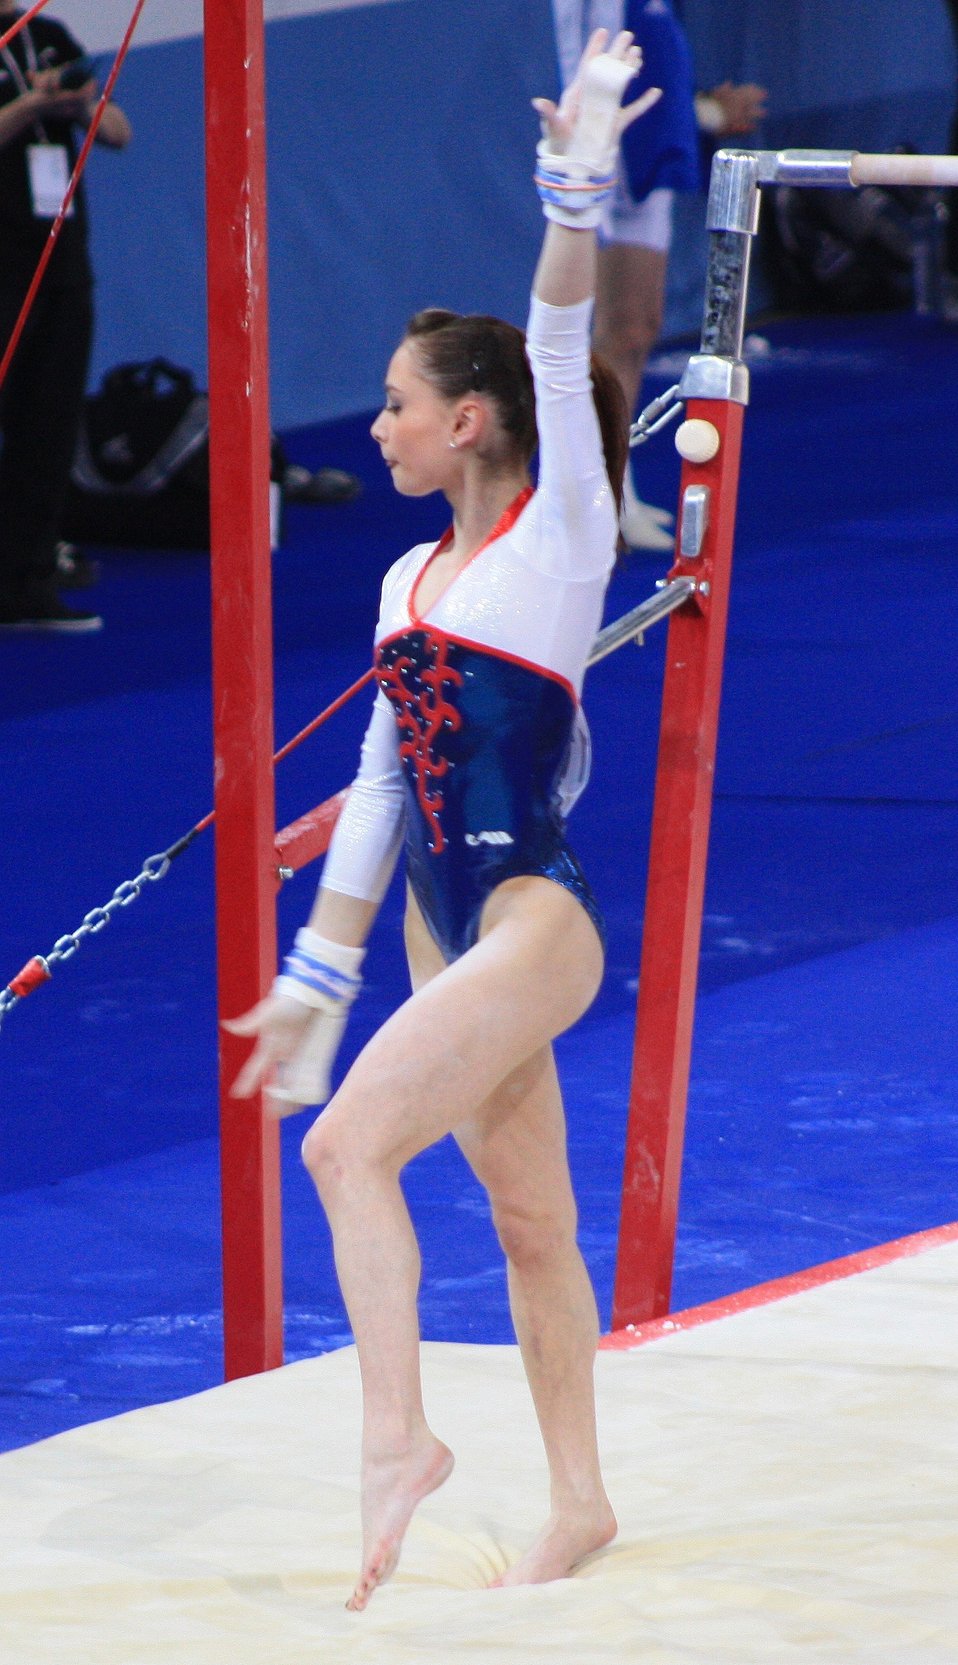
Fran√ßais†: Salut final de Pauline Morel apr√®s son passage en qualifications des barres asym√©triques aux Internationaux de France (2010).